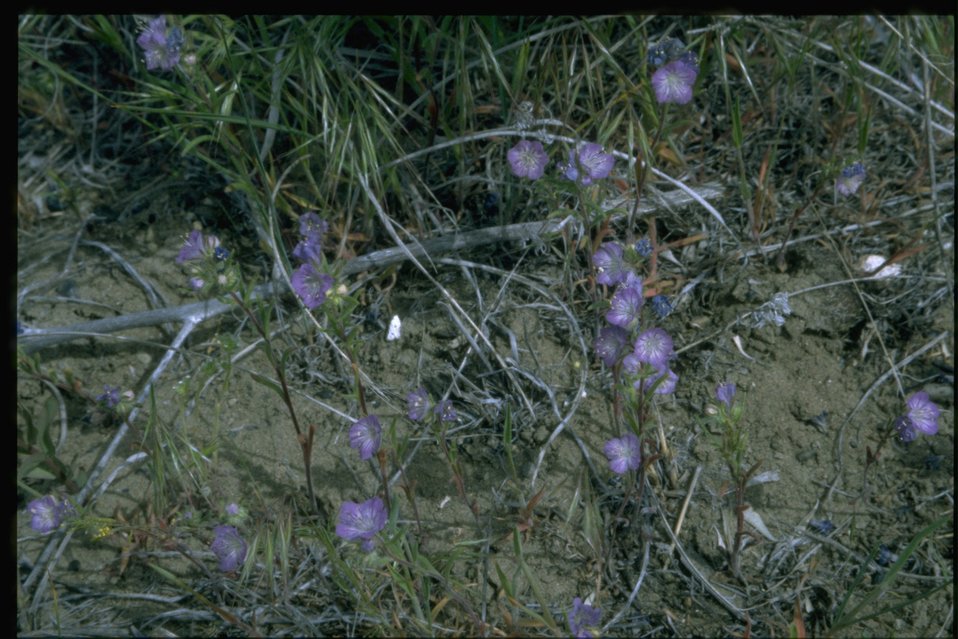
Farshot of Phacelia habitat.